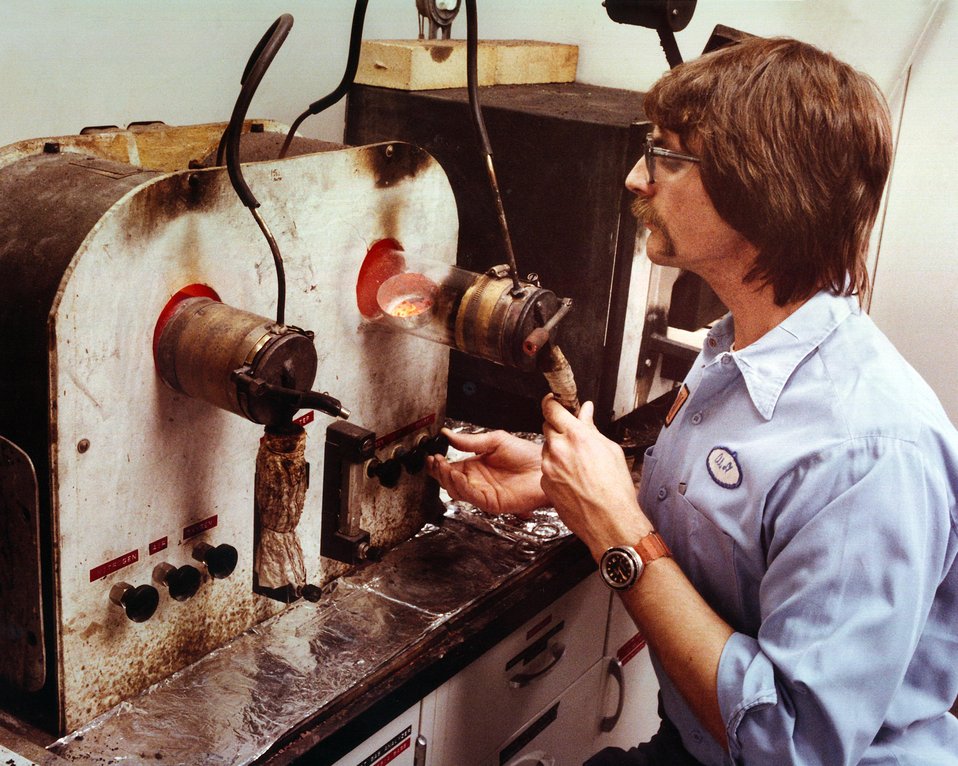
ALAN DAVIS, TECHNICAL SPECIALIST, OPERATES RAPID ASH APPARATUS.